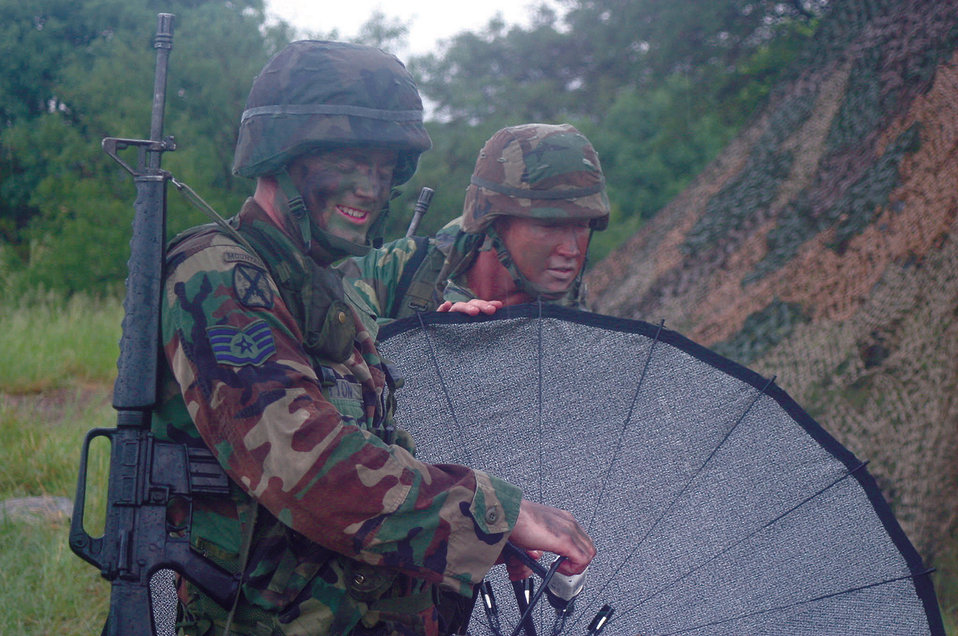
Fine-tuning

FORT HUACHUCA, Ariz. -- Staff Sgt. Kenneth Sutton and Senior Airman Christopher Patterson fine-tune the alignment of a satellite receiver during a portion of the staff weather officer pilot course here. The course teaches airmen to provide weather support for Army operations.